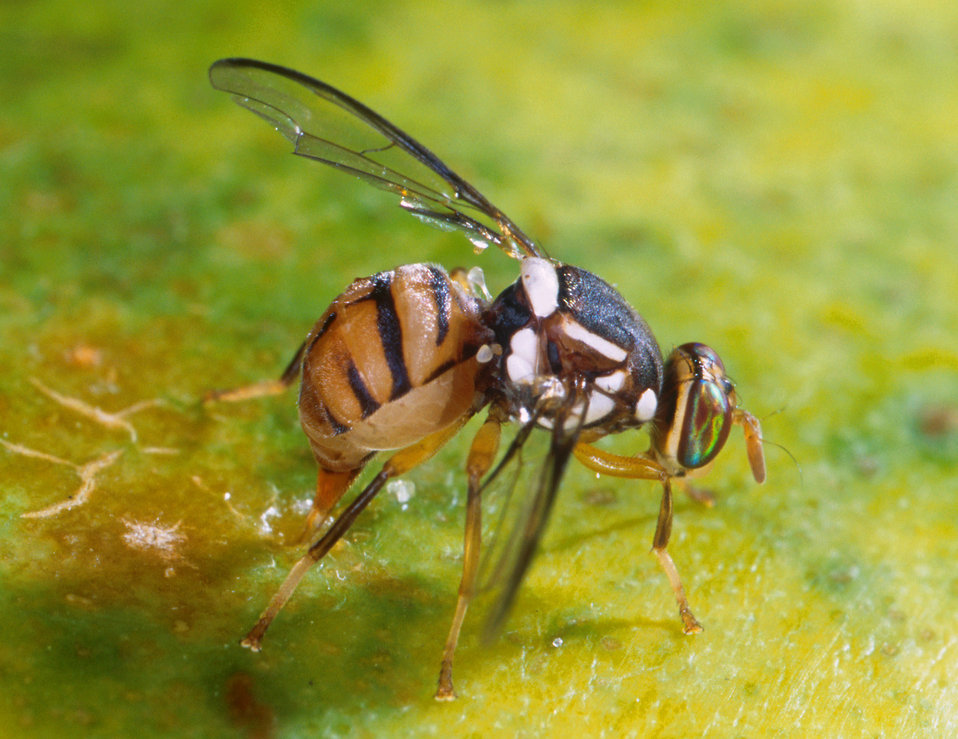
A female Oriental fruit fly (Bactrocera dorsalis) lays eggs by inserting her ovipositor in the skin of a papaya on Dec. 27, 2011. The U.S. Department of Agriculture (USDA) Agriculture Research Service (ARS) scientists are helping French Polynesia manage its Oriental fruit fly outbreak.